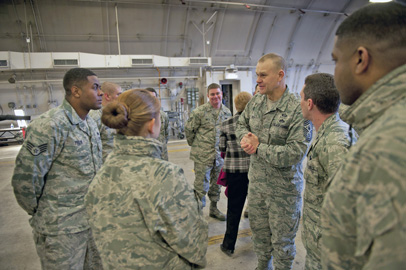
CMSAF Roy arrives at Misawa

Chief Master Sergeant of the Air Force James A. Roy talks with maintainers from the 14th Aircraft Maintenance Unit Dec. 28, 2010, at Misawa Air Base, Japan. Chief Roy visited a hardened aircraft shelter with Col. Michael Rothstein, the 35th Fighter Wing commander, to get an up-close look at the mission of the 35th Fighter Wing.